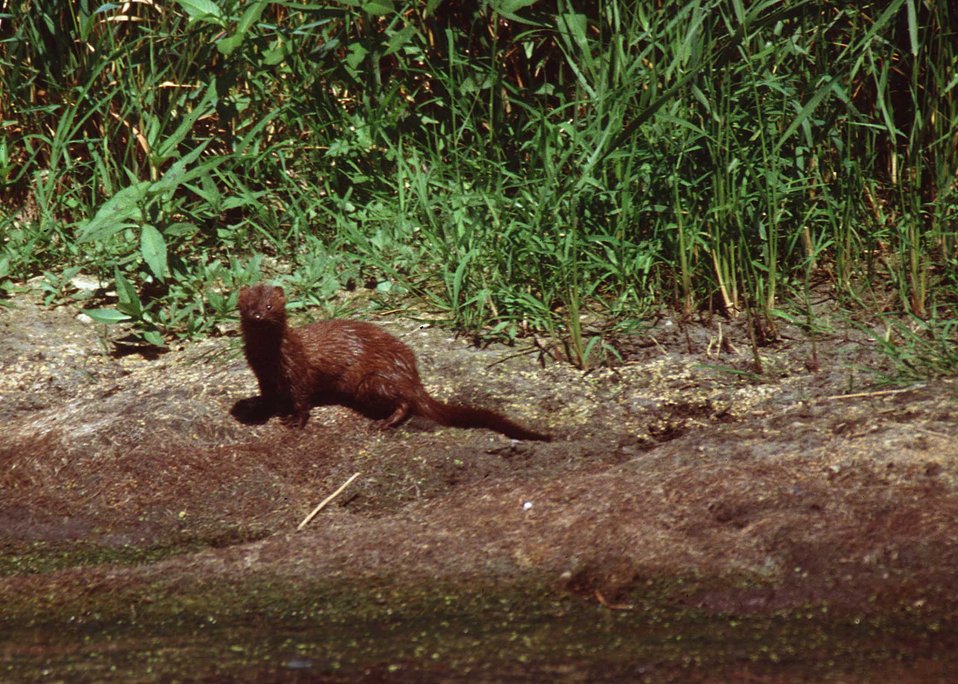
Mink by a pothole wetland in South Dakota.